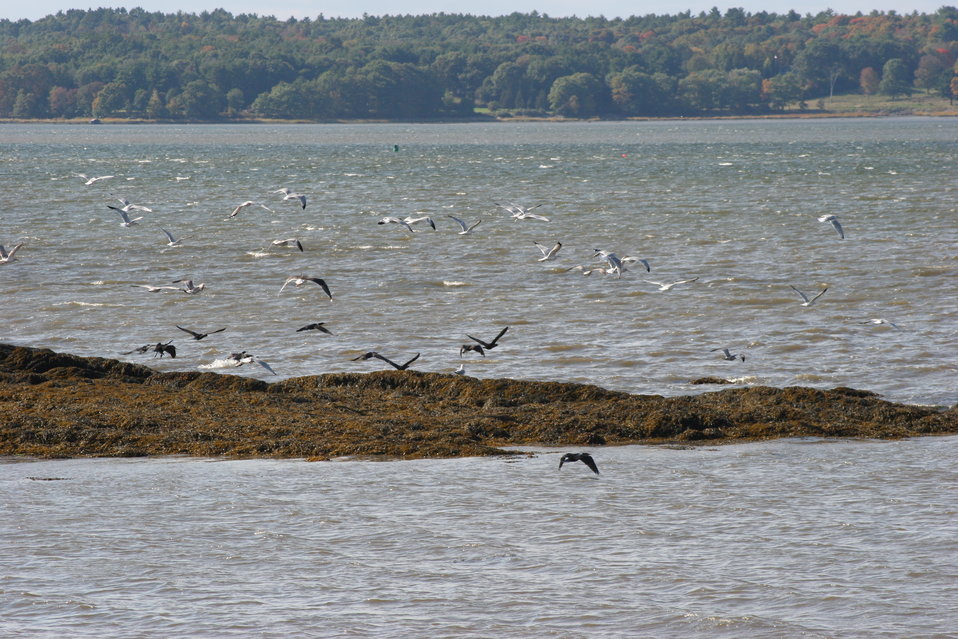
Shorebirds at Great Bay NWR

Shorebirds at Great Bay National Wildlife Refuge, Newington, NH.